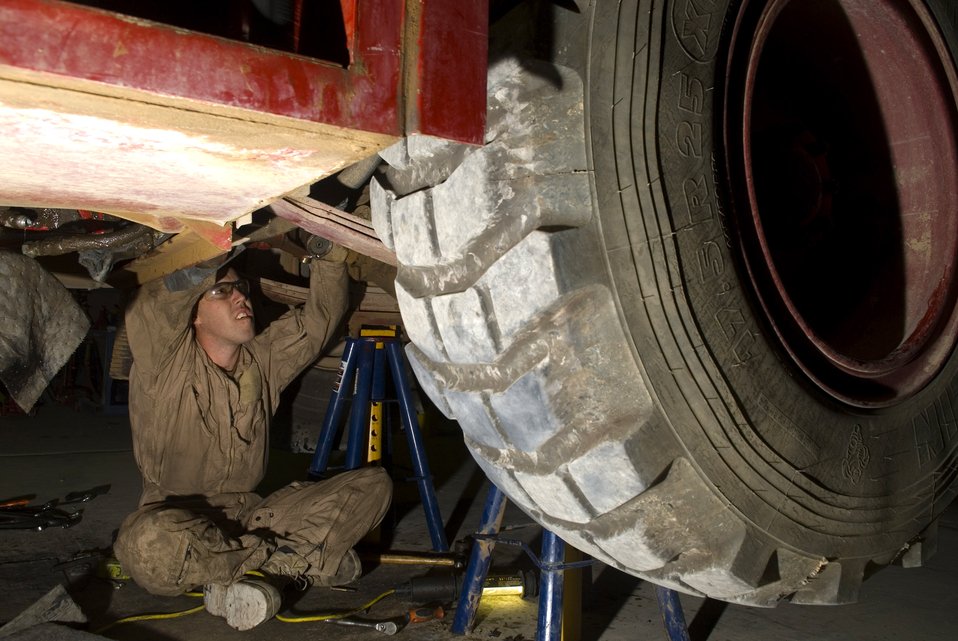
An ounce of prevention

Airman 1st Class Kyle Johnson performs preventive maintenance on a P-19 fire and rescue truck at Balad Air Base, Iraq. For emergency vehicles, turnaround time for maintenance is limited to 24 hours. Airman Johnson is deployed from F.E. Warren Air Force Base, Wyo.